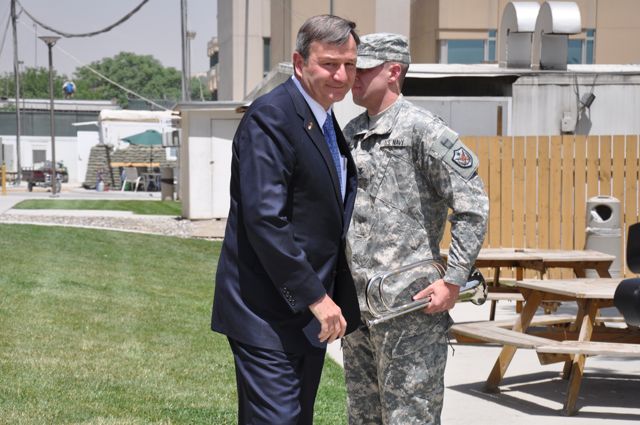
Memorial Day at US Embassy in Kabul